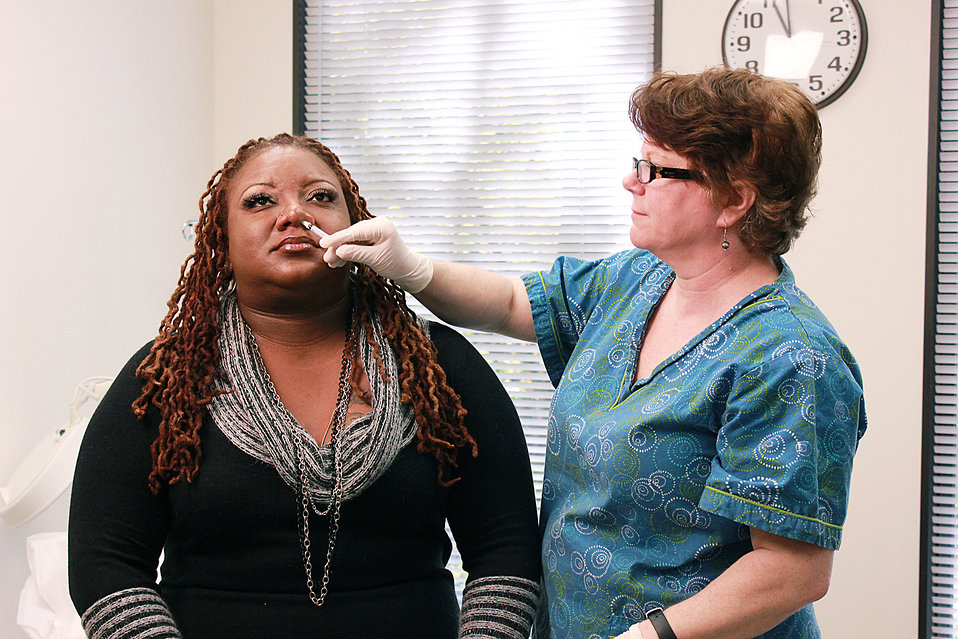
This image depicts a qualified nurse in a clinical setting, who was in the process of administering a dosage of FluMist� live attenuated intranasal vaccine LAIV) into the right nostril, and into this patient's nasal cavity. Note that the nurse's hands were gloved, thereby, avoiding the possibility of cross-contamination.